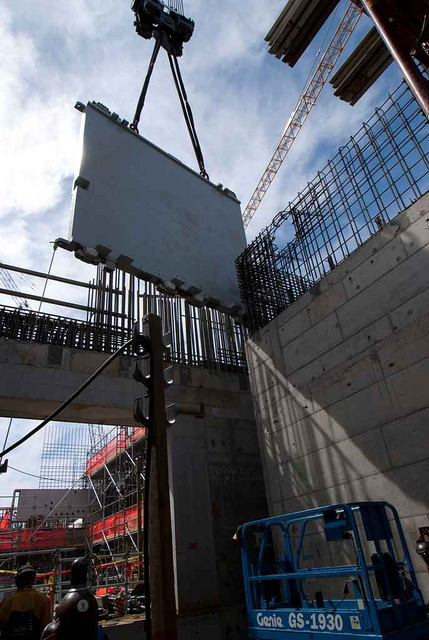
The 50-ton shield door at Hanford's Waste Treatment Plant was installed to extremely tight tolerances, down to five-thousandths of an inch, or less than the diameter of human hair.

When operational, the High Level Waste Facility will use two identical 90-ton melters to heat the high -level waste and grass-former mixture to 2,100 degrees Fahrenheit. The molten waste/ gas mixture will then be poured into stainless steel canisters, sealed and prepared for storage and ultimate disposal.